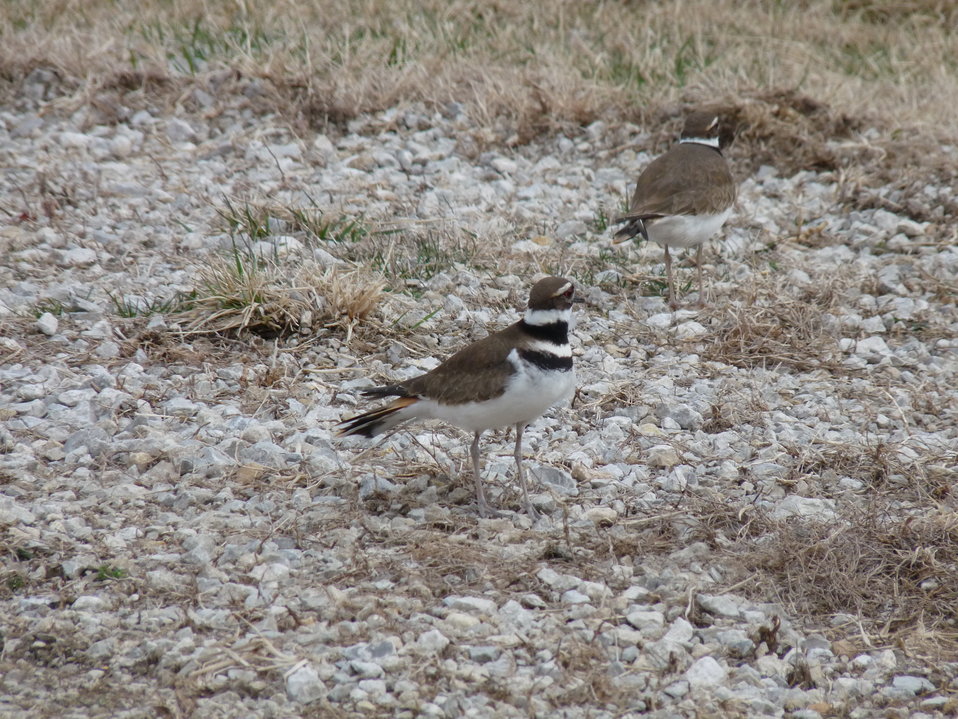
Killdeer

This species of shorebirds can be seen throughout the southern Great Plains in shortgrass habitats.